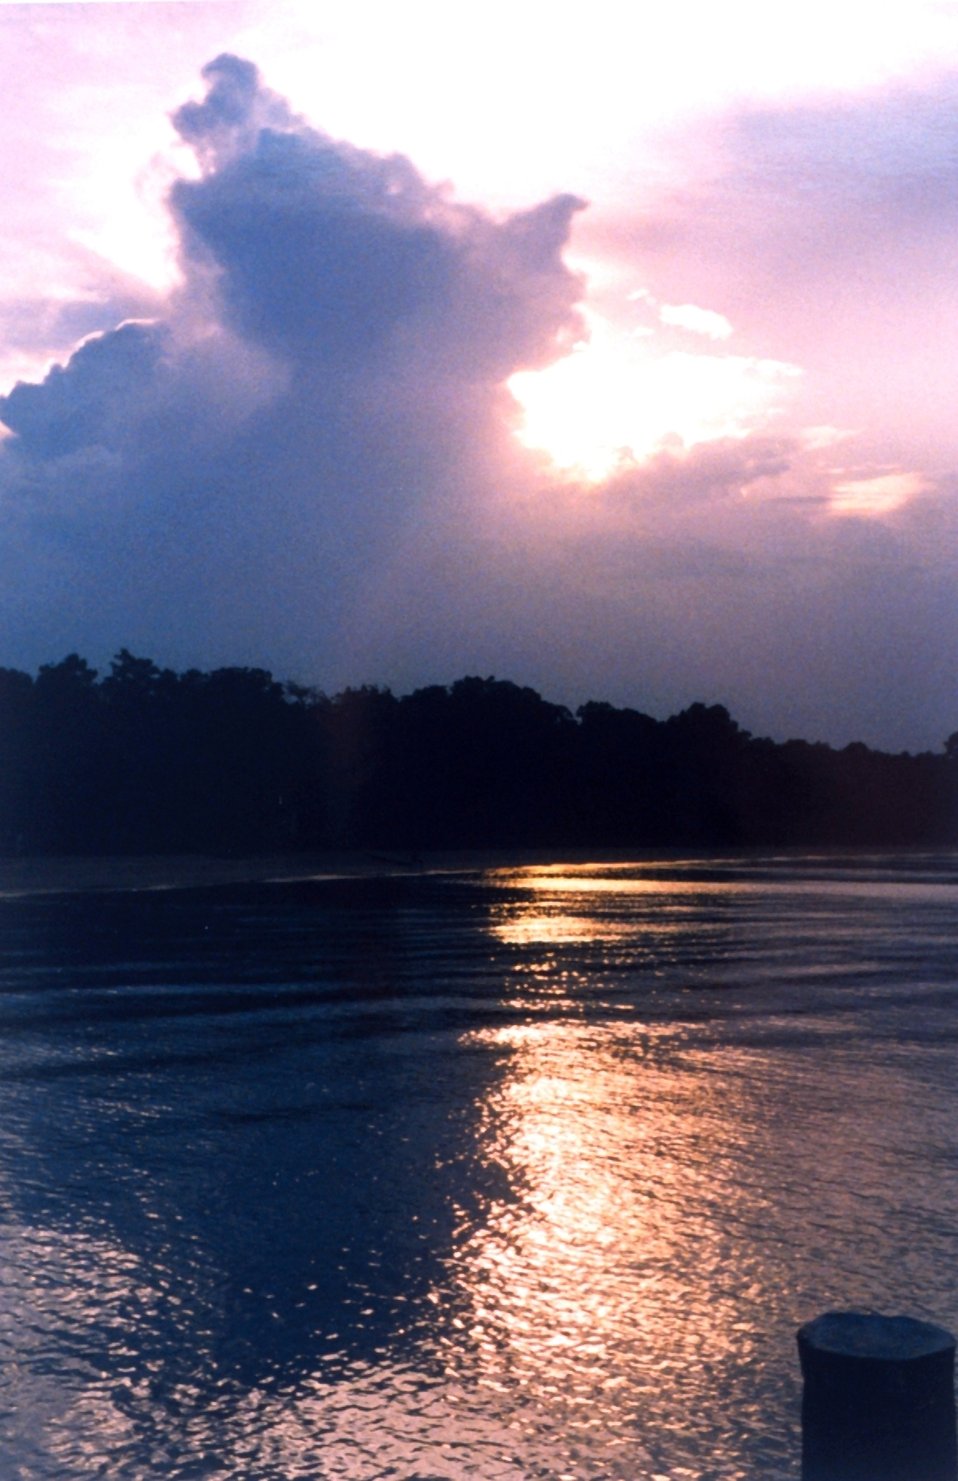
A thunderhead building over the Patuxent River at sunset.